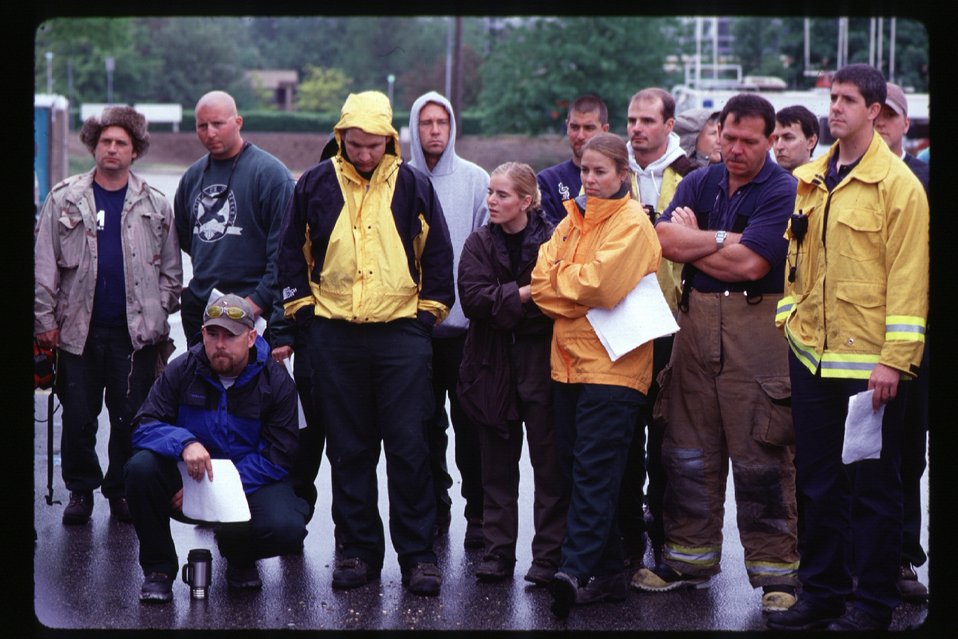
Urban interface Four Rivers Field Office LSRD Lower Snake River District